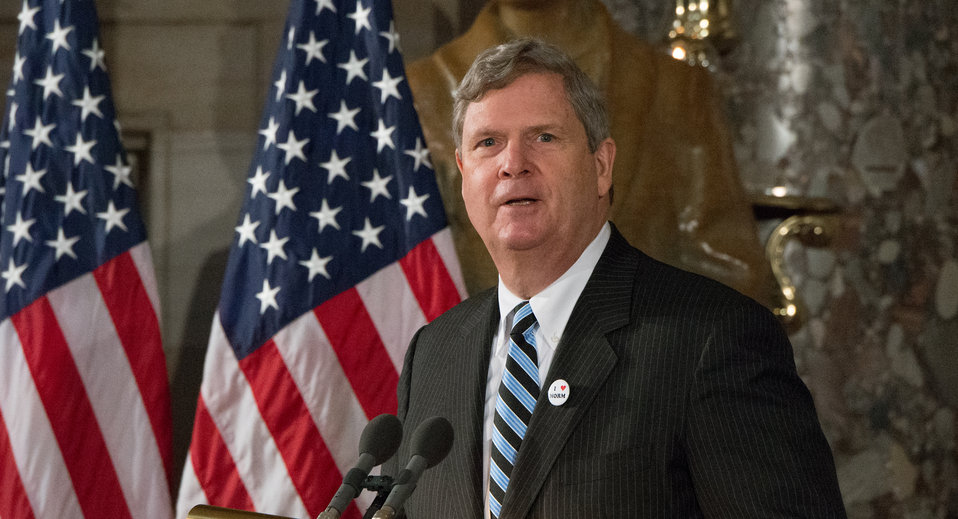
Agriculture Secretary Tom Vilsack speaks at the dedication of the Dr. Norman Borlaug statue in the National Statuary Hall at the U. S. Capitol, in Washington, D.C. on Tuesday, Mar. 25, 2014. Today commemorates 100 years since Dr. Borlaug’s birth. Through his scientific and humanitarian achievements, Nobel Laureate Dr. Norman E. Borlaug (1914-2009) has been credited with saving millions of people from starvation in developing countries. His collaborative work with scientists in Mexico on a high-yielding, disease resistant dwarf wheat sparked the Green Revolution of the 1960s. Other speakers include Majority Leader of the The National Statuary Hall Collection in the U.S. Capitol is composed of statues donated by individual states to honor persons notable in their history.